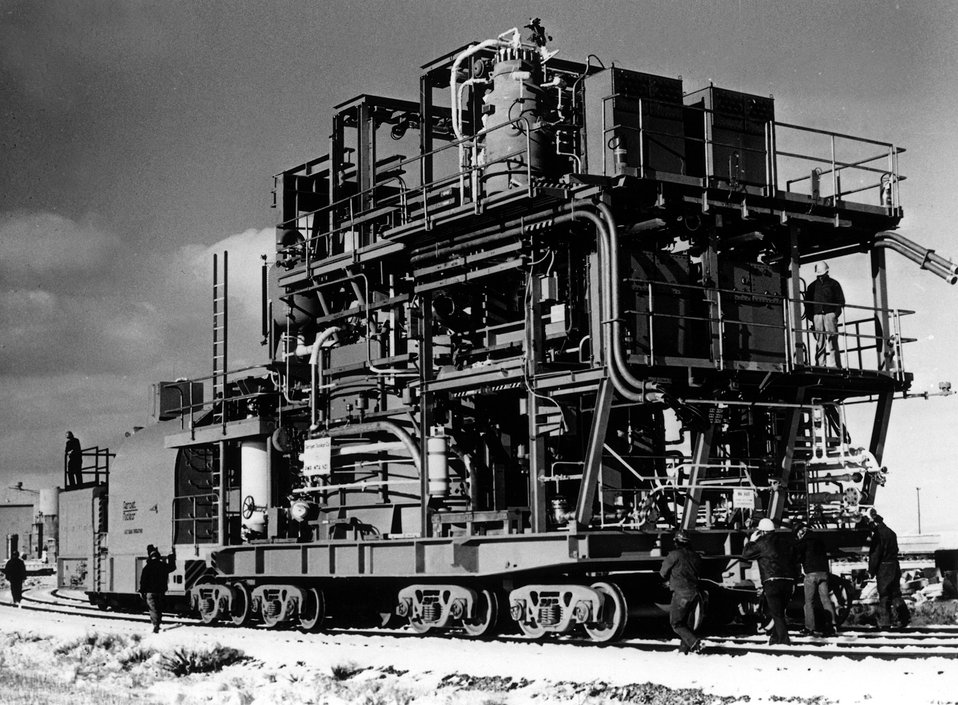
NRTS, Idaho... The LOFT (Loss of Fluid Test) Mobile Test Assembly (MTA) en-route to the LOFT containment building on November 2, 1973 at the U.S. Atomic Energy Commission's National Reactor Testing Station in Idaho. Circa 1974.